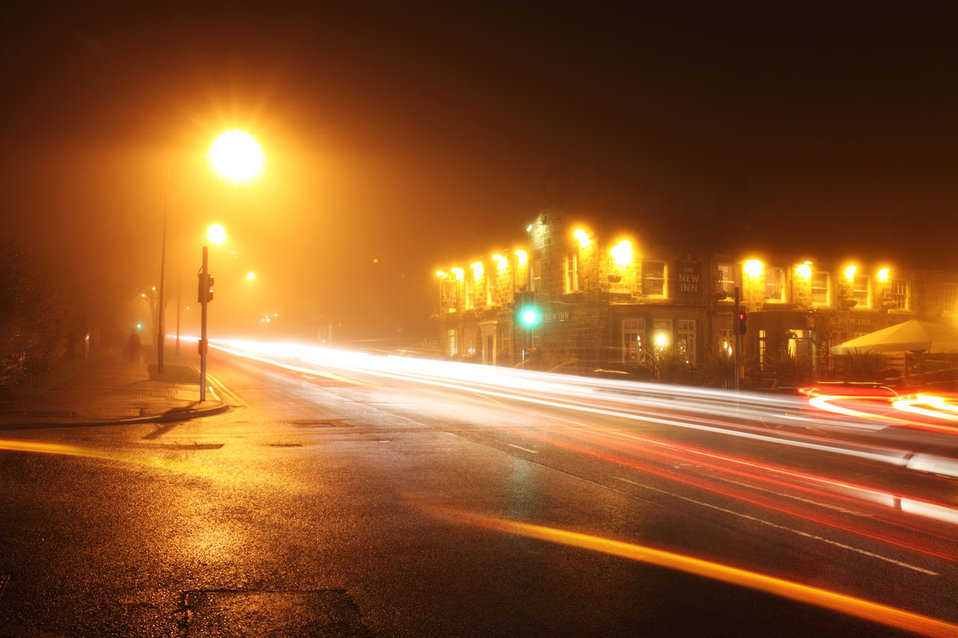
Traffic at night in fog.